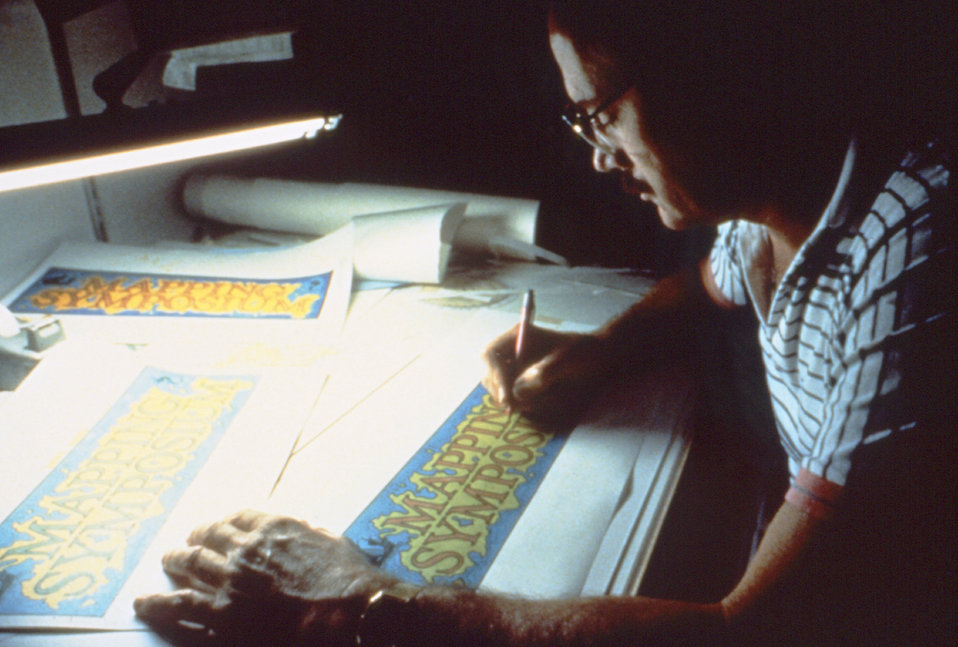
This was CDC graphic artist Travis Benton working at his drafting table in DPDE's Creative Arts Branch, during the early 1980's.